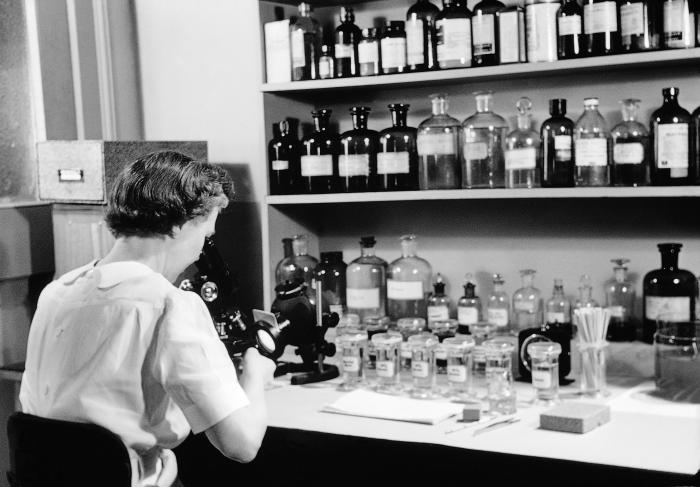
This is a 1954 still-shot from the CDC produced film "The Diagnosis of Intestinal Protozoa by Means of Hematoxylin-Stained Smears", and showed laboratorian Sadie Johnson Geiger looking into a microscope during her investigation.